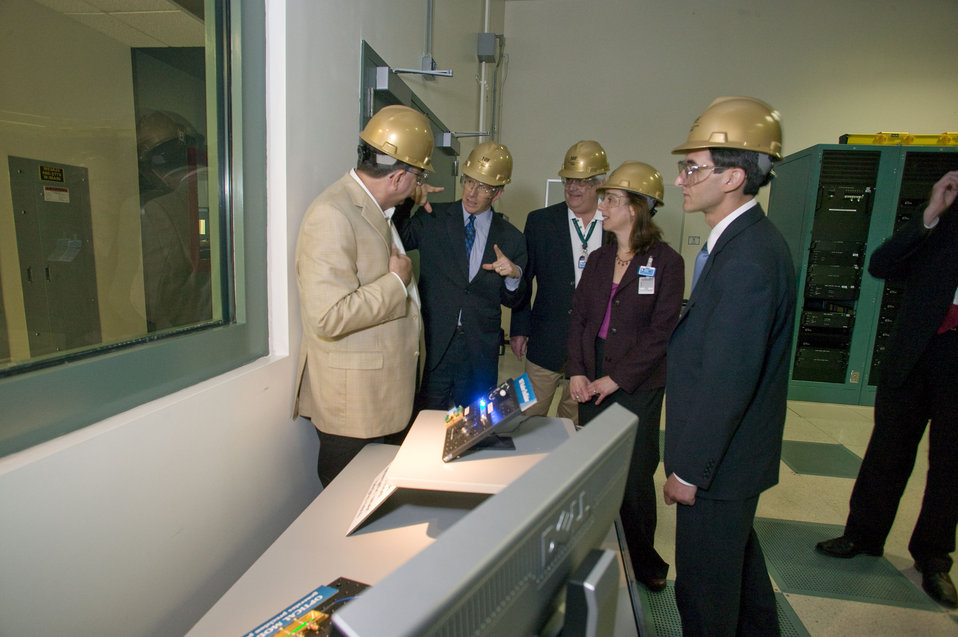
Deputy Secretary of Energy Daniel Poneman

Poneman inside the Master Oscillator room at the NIF facility.
Several components used to create the laser pulses are being
demonstrated by Ed Moses. Pictured from left to right, Moses, Poneman,
Director George Miller, Julie Levin, California Energy Commission, Adam
Cohen